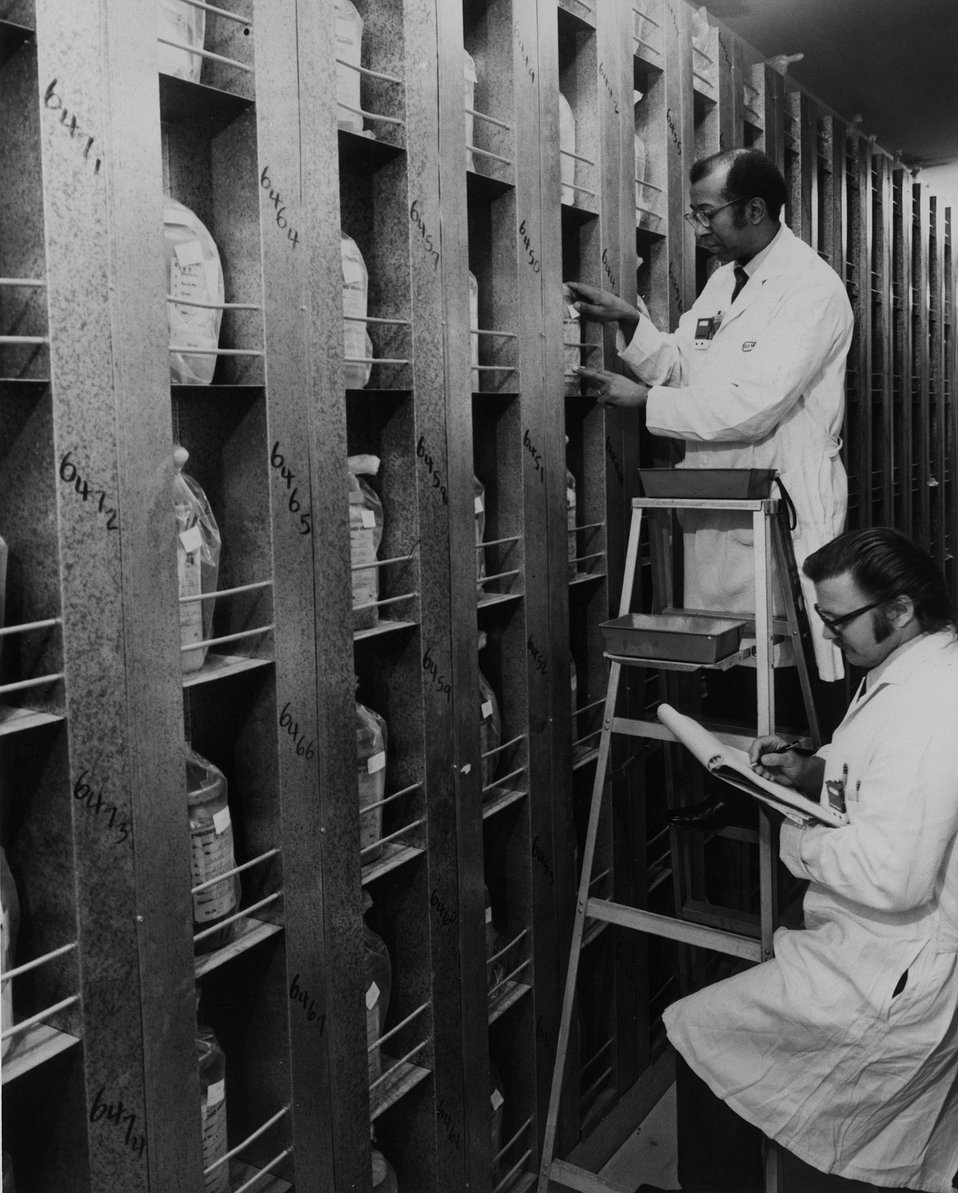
An AEC Regulatory inspector makes an independent check to verify licensees inventory of fuel particles for high-temperature, gas-cooled power reactor.